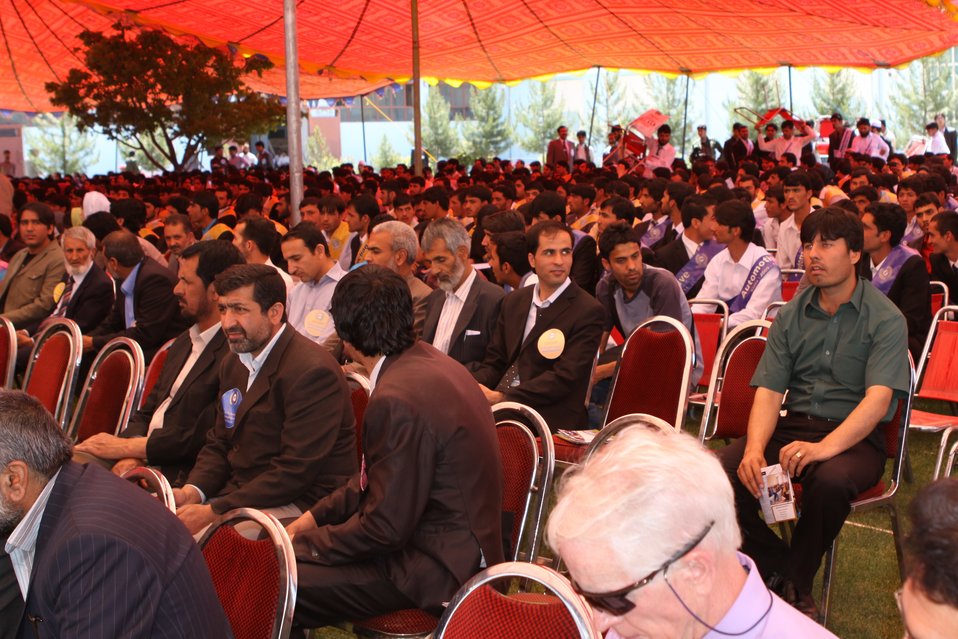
100522 ATVI Graduation 035